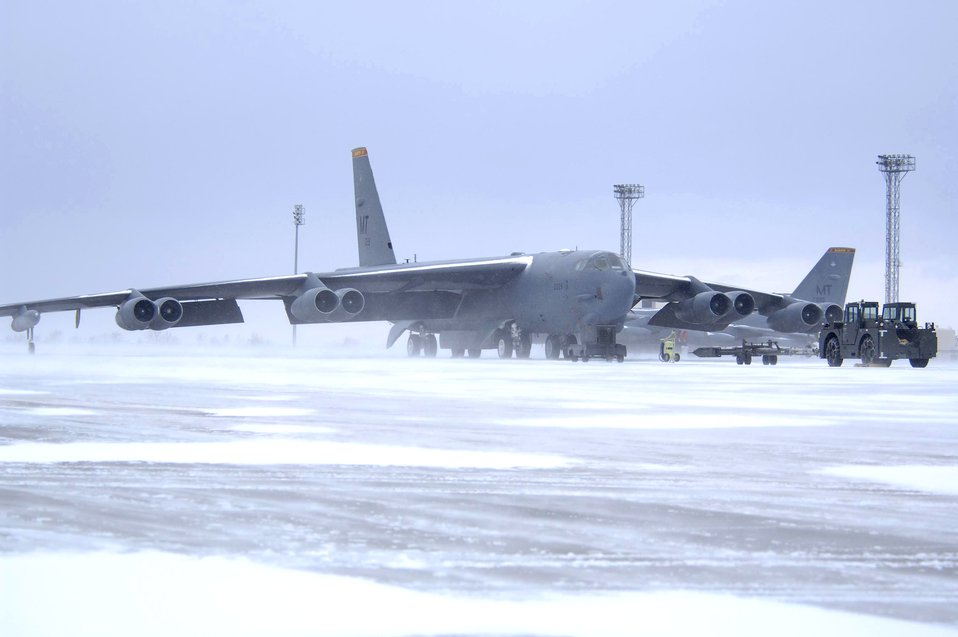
Enduring the cold

A B-52 Stratofortress waits to be prepped for flight Jan. 8 at Minot Air Force Base, N.D. The base experienced low visibility, sub-zero temperatures and gusts of wind up to 50 mph.